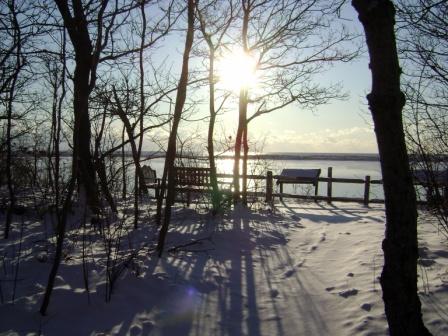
Morris Island

Monomoy National Wildlife Refuge, MA.